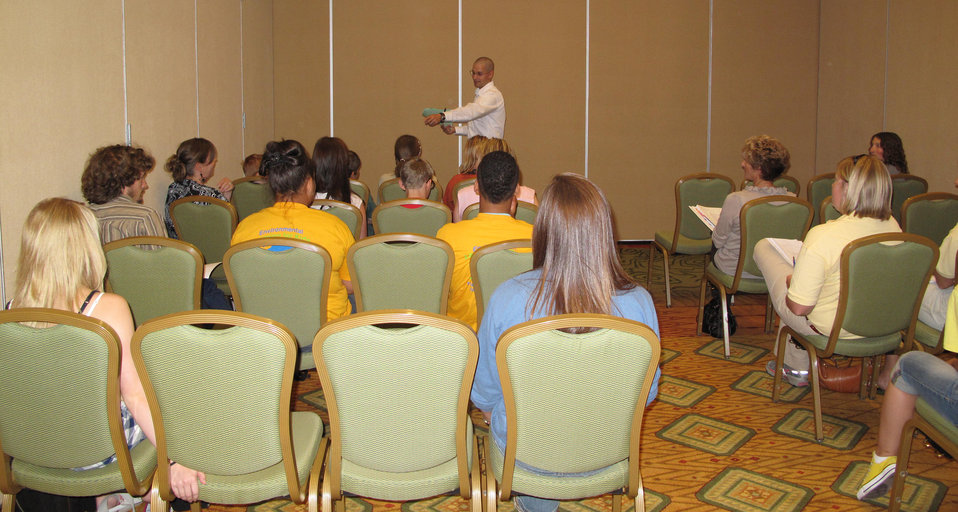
America's Outdoor Initiative Youth Conference

The youth along with adults were split into several smaller discussion groups, where they were able to voice their opinion about how the government can help to get youth outdoors and where to focus funding.